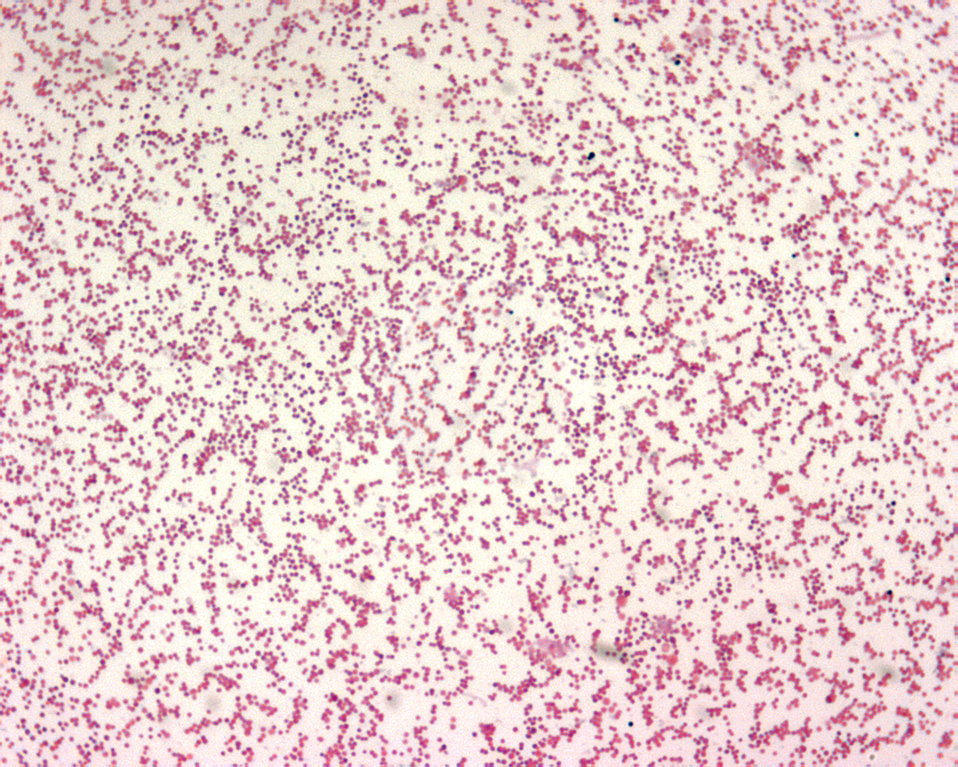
Francisella tularensis is Gram-negative in its staining morphology.